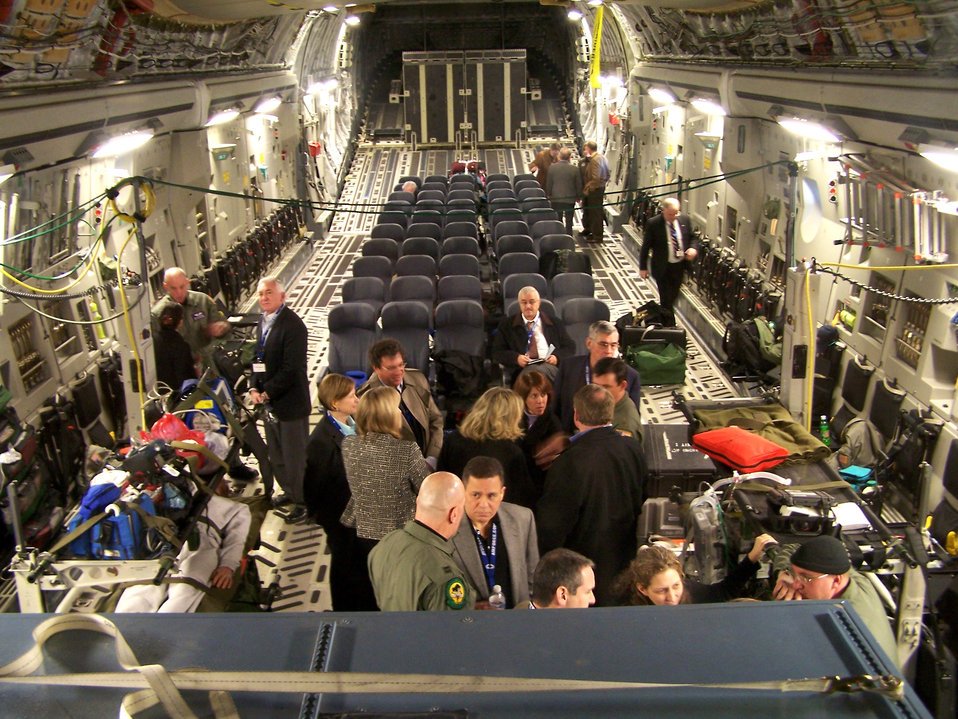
Civic Leader Tour

An air evacuation crew from the 183rd Aerial Evacuation Squadron in Jackson, Miss., and a critical care air transport team from the 81st Medical Group, Keesler Air Force Base, Miss., explain the processes involved in transporting patients aboard a C-17 Globemaster III aeromedical evacuation flight to a group of high-level medical professionals on Jan. 23, part of a national civic outreach tour enroute to Wilford Hall Medical Center in San Antonio.